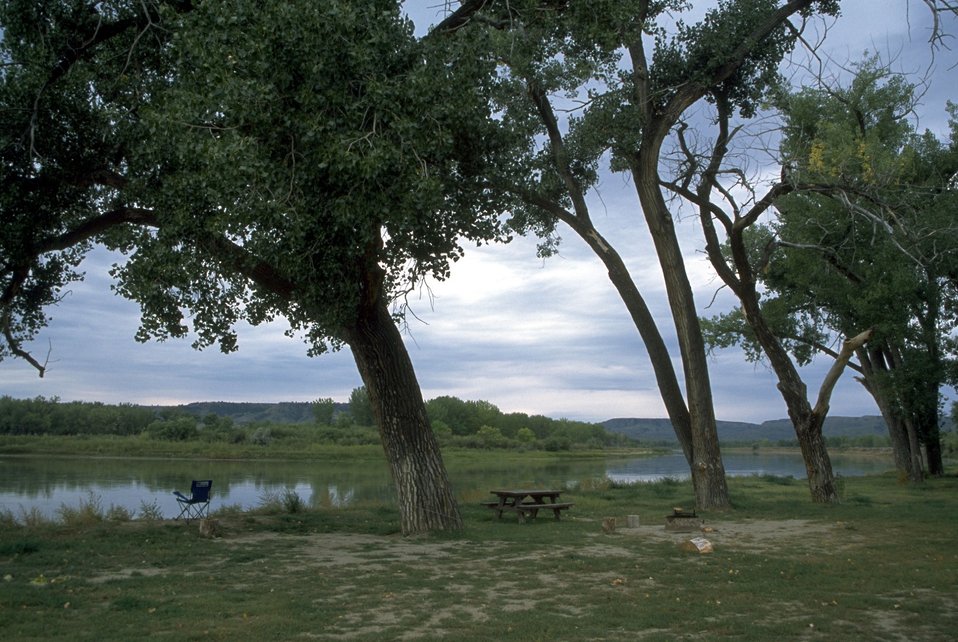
Camping area at Woodhawk Bottom, Upper Missouri River Breaks National Monument.